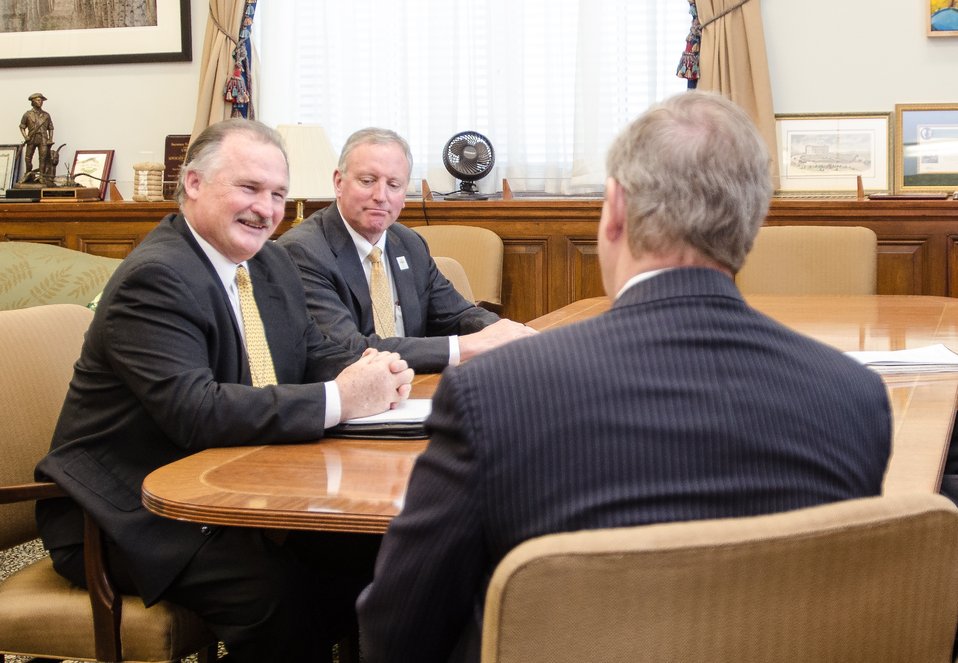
Agriculture Secretary Tom Vilsack (center) meets with the National Corn Growers Association President Fred Yoder (left), at the U.S. Department of Agriculture in Washington, DC, Thursday, April 11, 2013.